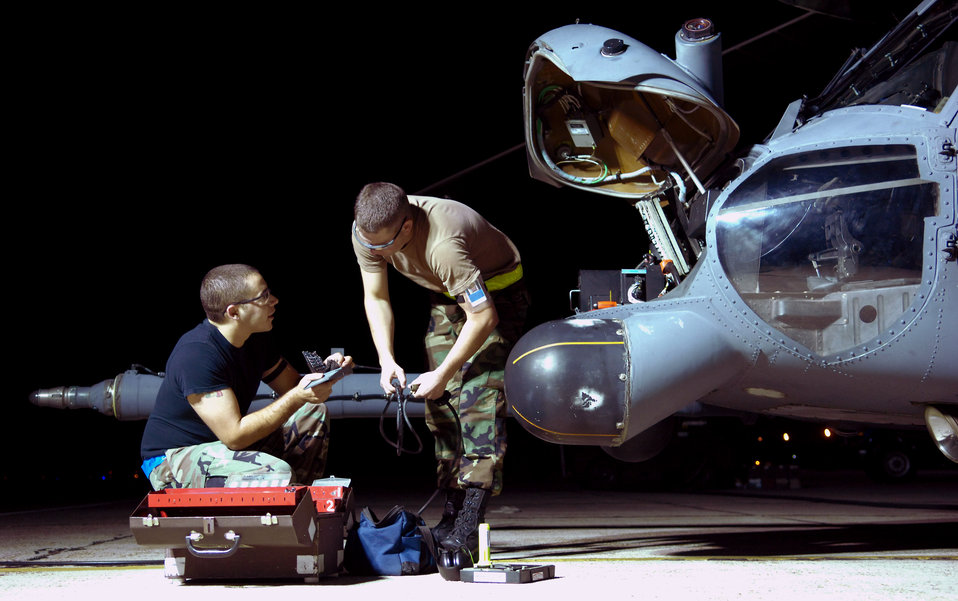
Paving the way

Senior Airman John Baia and Airman 1st Class Eric Dininger work on an HH-60G Pave Hawk helicopter Oct. 31 at Moody Air Force Base, Ga. Moody AFB Airmen work around the clock to ensure flight success of the aircraft. Airmen Baia and Diniger are assigned to the 23rd Equipment Maintenance Squadron.